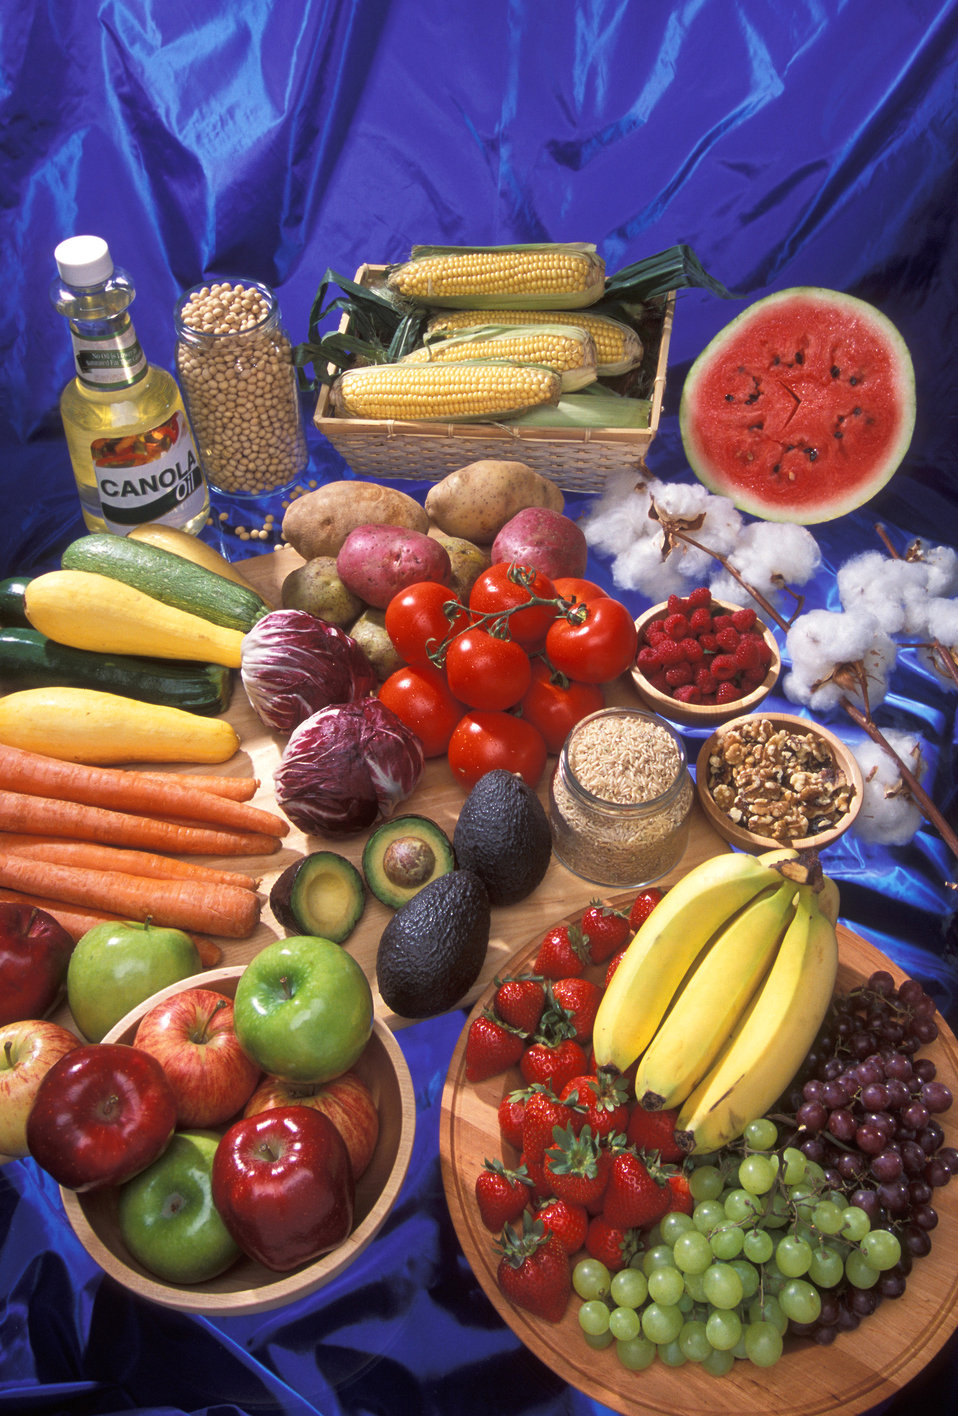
Ongoing or planned transgenic studies are in progress on canola oil, beans, corn, watermelon, squash, potatoes, cotton, red cabbage, tomatoes, raspberries, carrots, avocados, rice, walnuts, apples, strawberries bananas and grapes on Aug. 27, 2004.